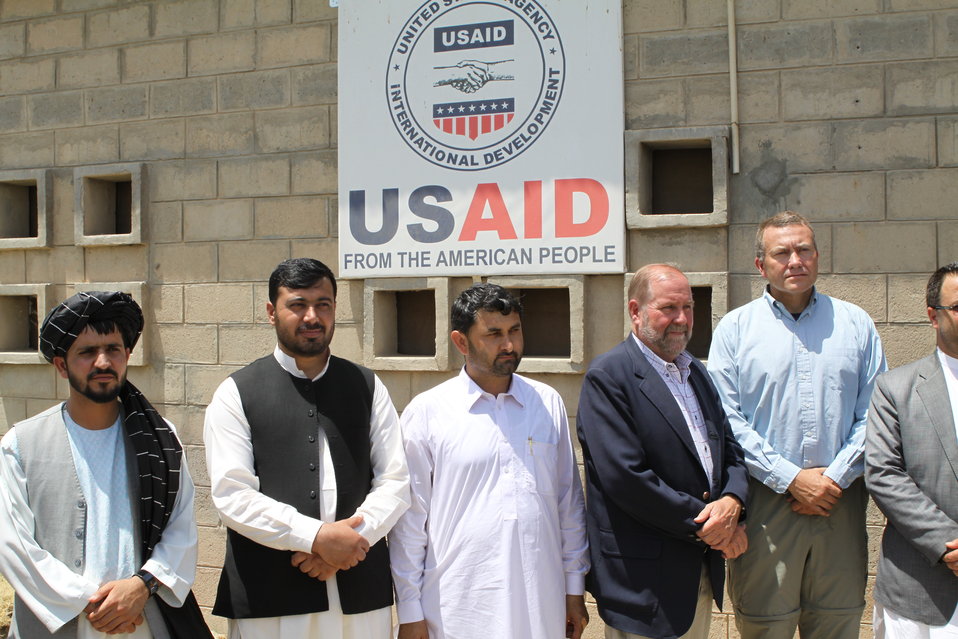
Bolan Poultry Farm